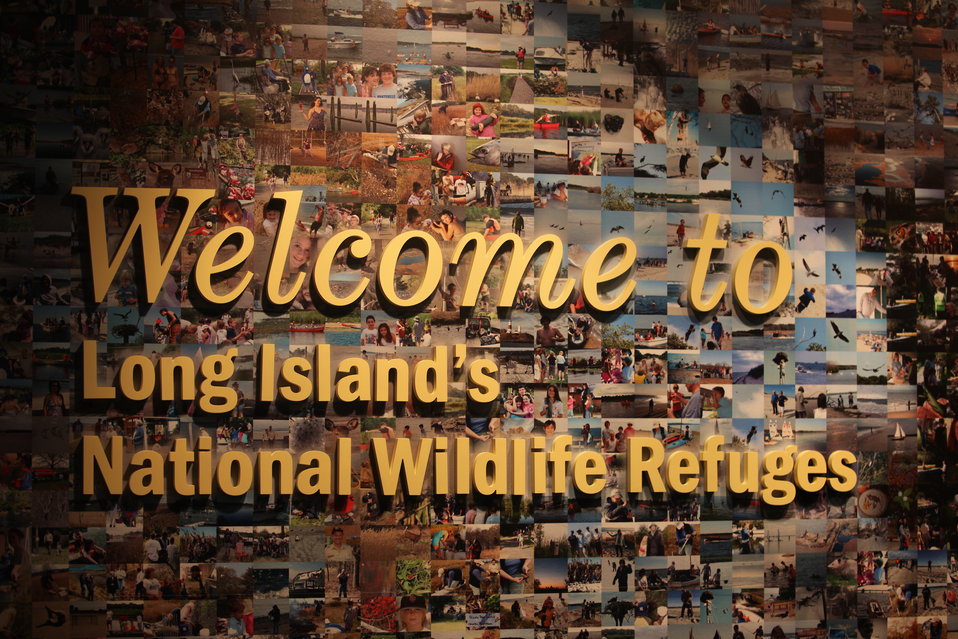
Mural closeup

This is a closeup photo of the mural at the entrance of the Long Island NWR Complex Visitor Center.